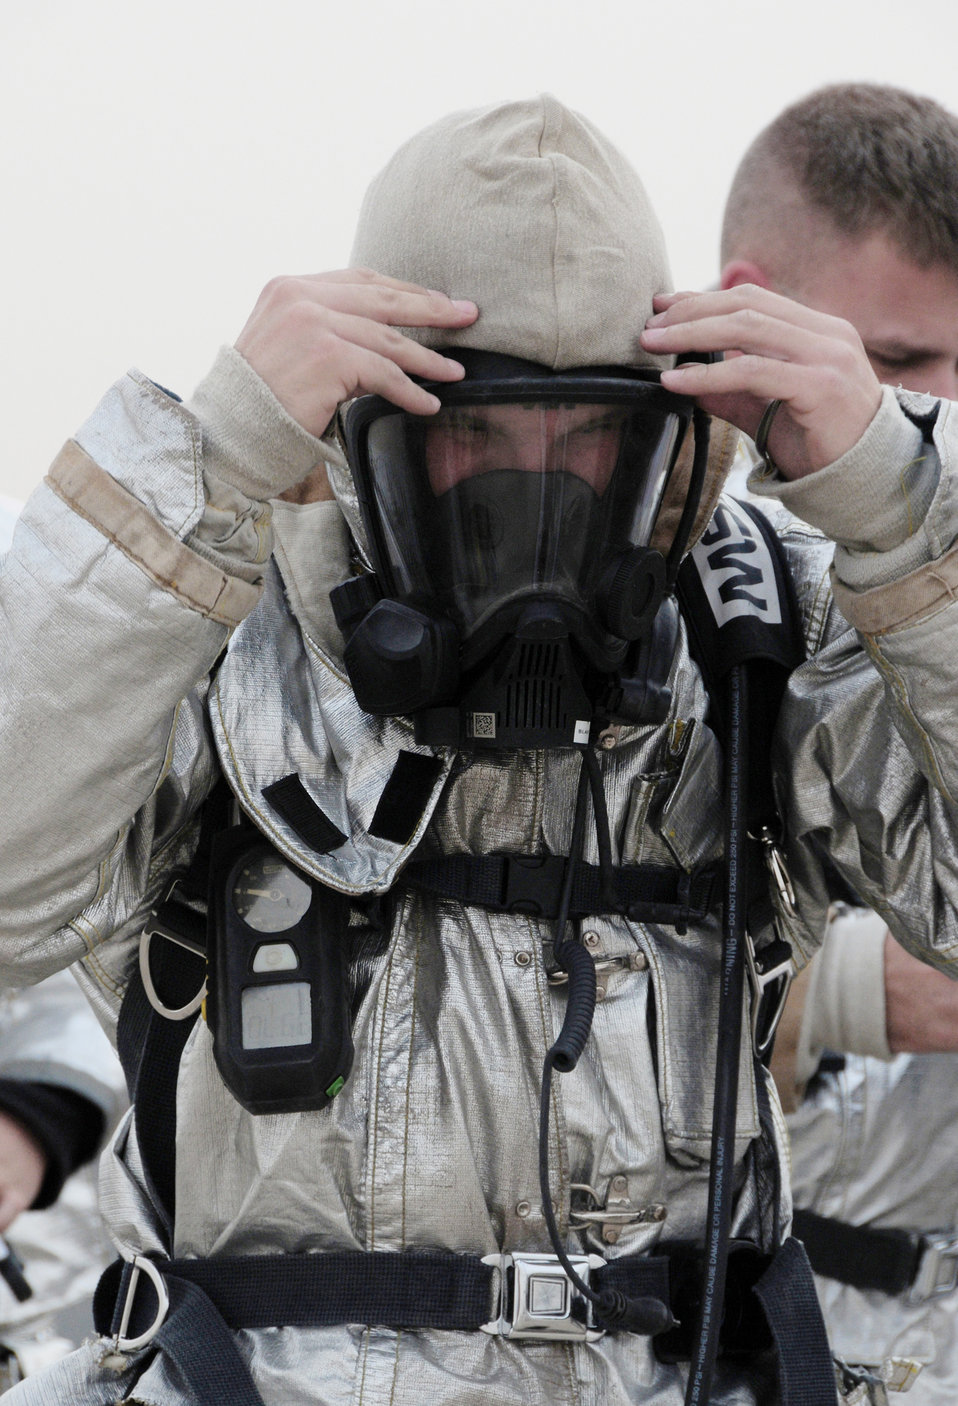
Firefighters test their skills during an annual training

Master Sgt. Jake Blair tightens the straps on his oxygen mask April 29, 2010, in preparation for fire training at an nearby base in Southwest Asia. Sergeant Blair is the assistant chief of operations with the 386th Expeditionary Civil Engineer Squadron fire department.